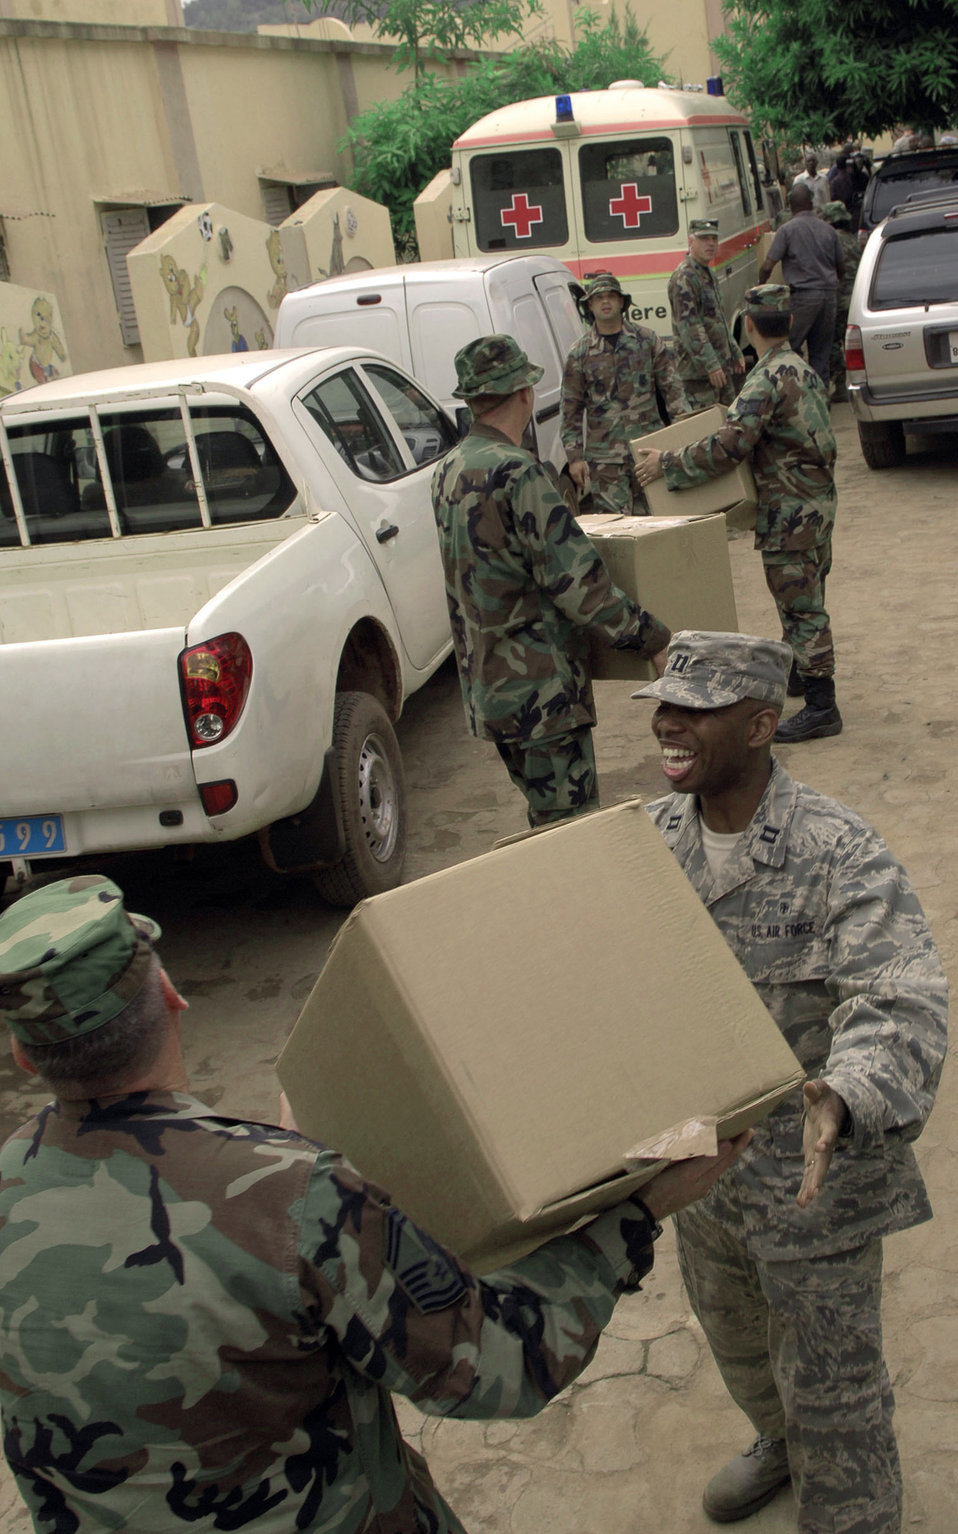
Airmen Donate Clothes to Malian Orphanages

Airmen from the 31st Medical Group at Aviano Air Base, Italy, pass boxes of children's clothing to be donated to the Bamako National Orphanage, July 16. Aviano Airmen collected more than 2,500 pounds of clothing, toys and shoes to distribute at Bamako orphanages.